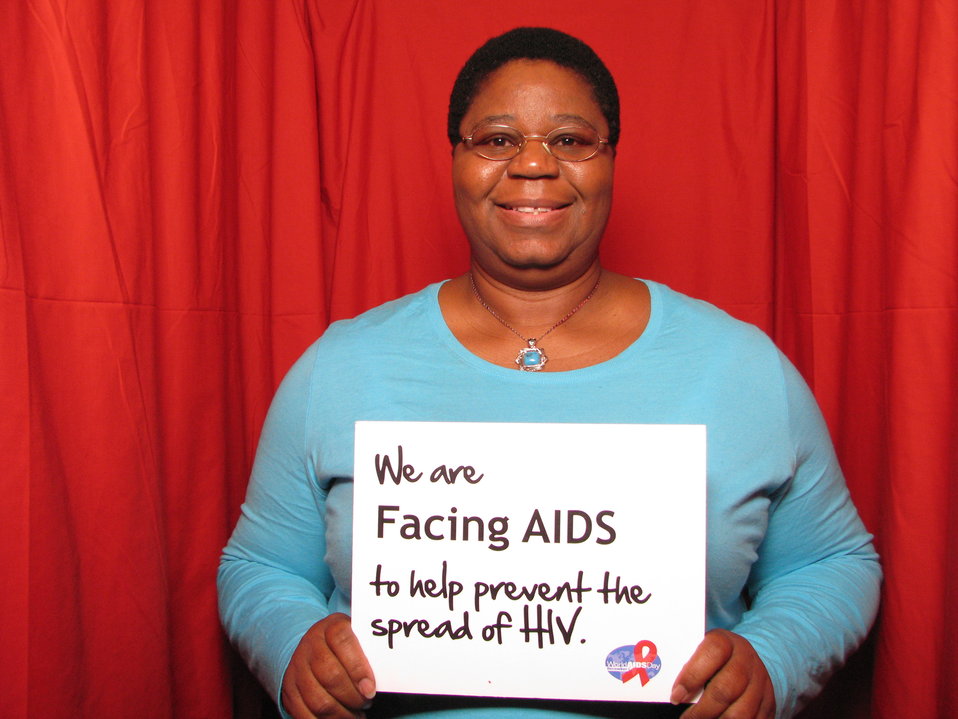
We are FACING AIDS to help prevent the spread of HIV.

From the AIDS.gov photo booth at the U.S. Conference on AIDS, September 2010 (Orlando, FL).